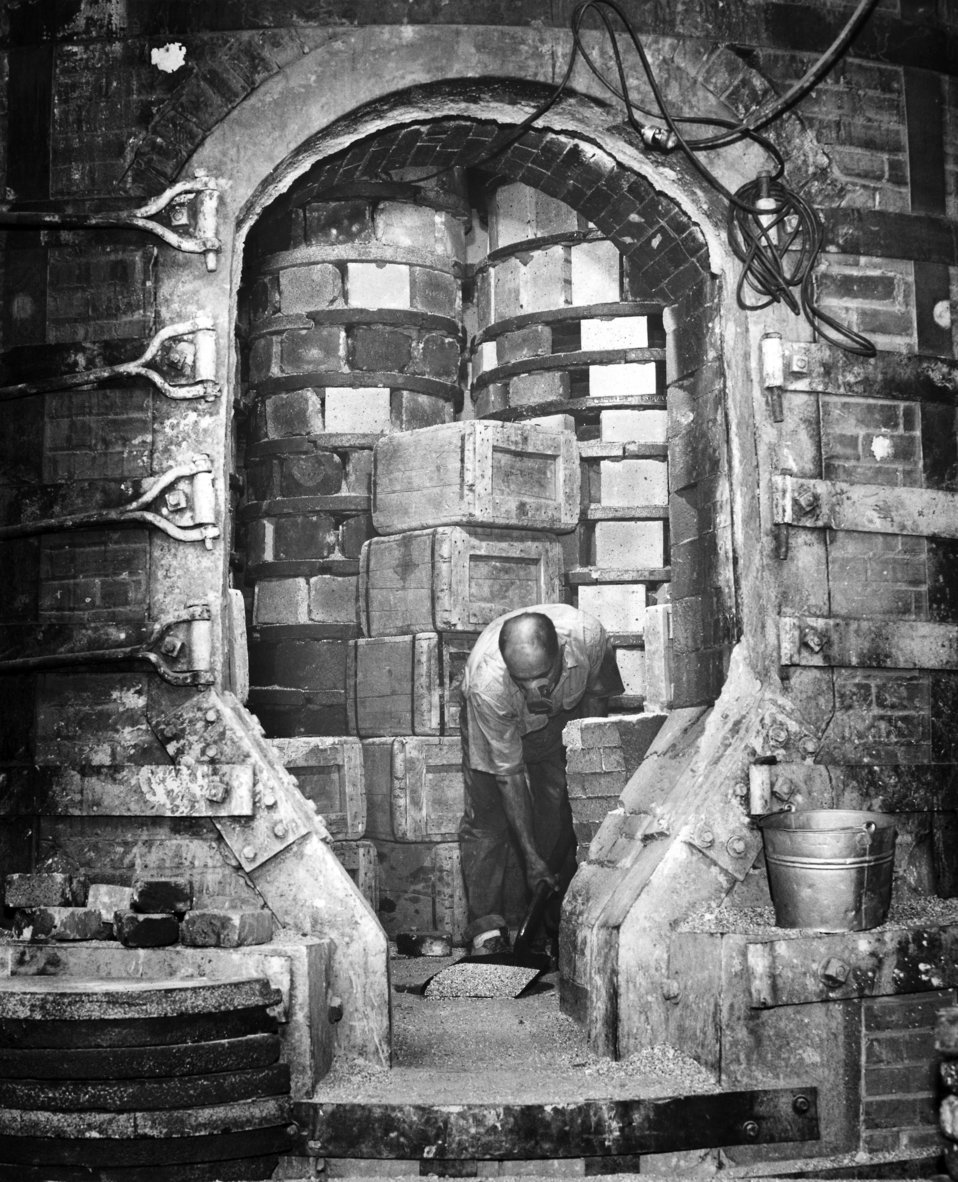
From 1953, this historical photograph was provided by the Center for Disease Control's (CDC), National Institute for Occupational Safety and Health (NIOSH). It depicted a worker wearing a respirator as he shovels sand inside a kiln. The image was taken on the premises of the Precision Grinding Wheel Company. In the 1940s and 1950s, the Industrial Hygiene Division (IHD) investigated hazards associated with activities such as metal grinding. It was in scenarios such as this where there existed the potential for worker health problems associated with industrial metal grinding, including respiratory and dermatologic hazards from inhalation and contact with fungi- and bacteria-contaminated synthetic metal-working fluids, oil mists, and grinding dust in the machining areas.